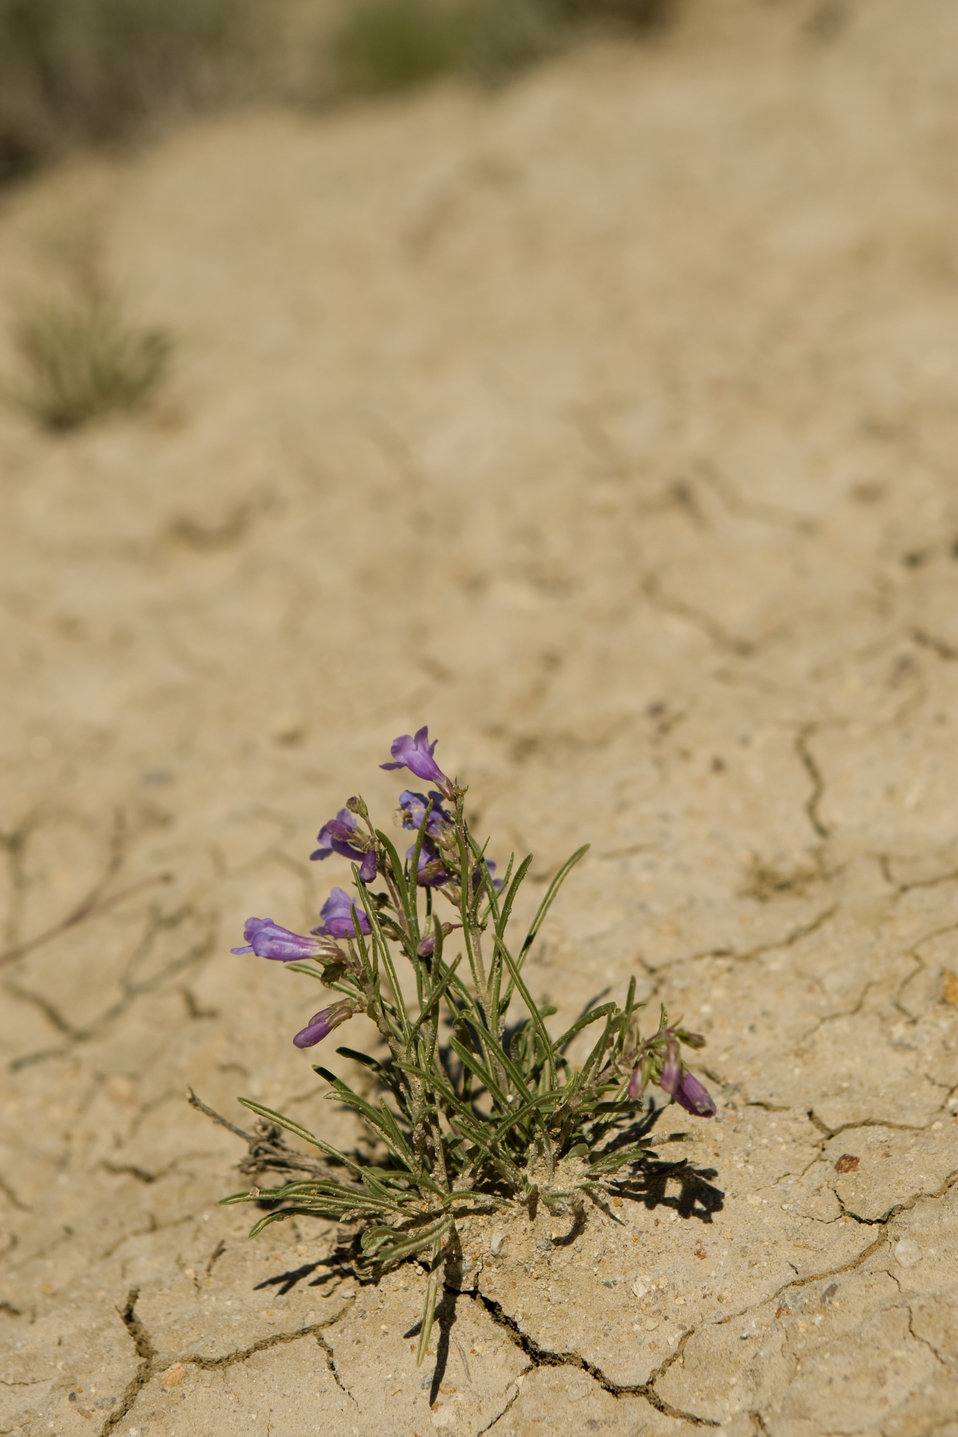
Colorado Rare Plant Conservation Initiative

The Colorado Rare Plant Conservation Initiative (RPCI) is a partnership of 23 statewide and regional agencies, private organizations, and academic institutions working to conserve 121 rare plants in Colorado. As part of these efforts the group developed the Colorado Rare Plant Conservation Strategy, developed Best Management Practices to reduce energy development impacts, addressed climate change, and developed focused strategies for the conservation of individual species at eight priority landscapes. The group has also worked to coordinate volunteer efforts for plant conservation across the state.